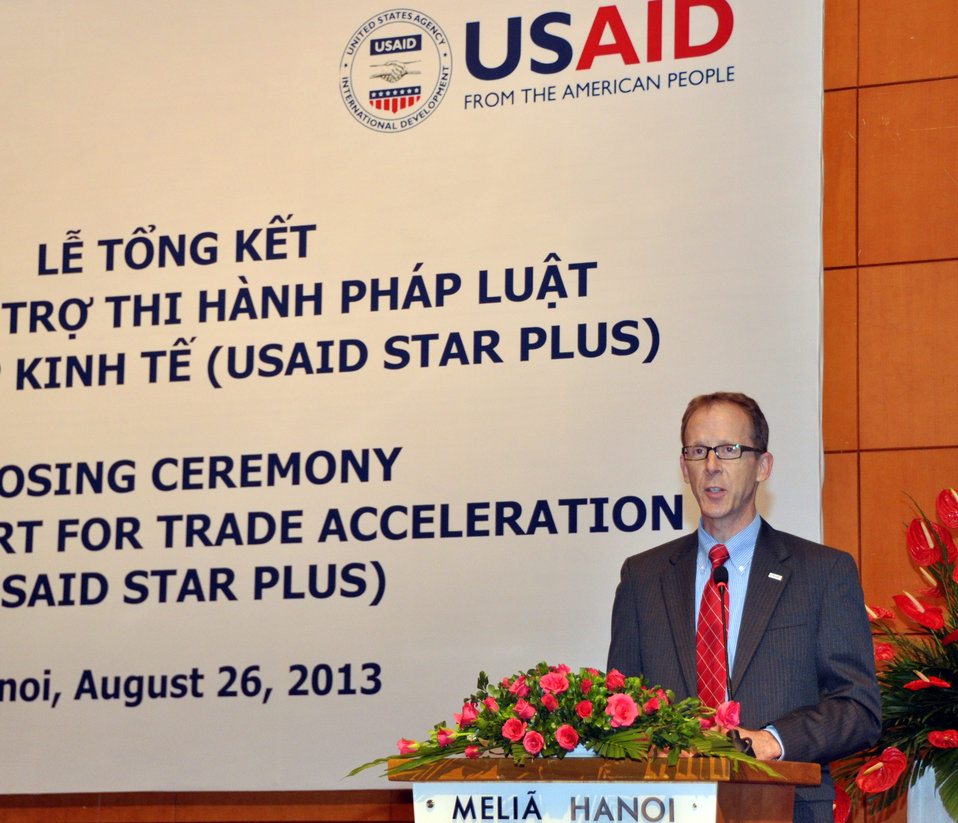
USAID Mission Director Joakim Parker speaks at the USAID Support for Trade Acceleration Project (USAID STAR Plus) Closing Ceremony

Hanoi, August 26, 2013.